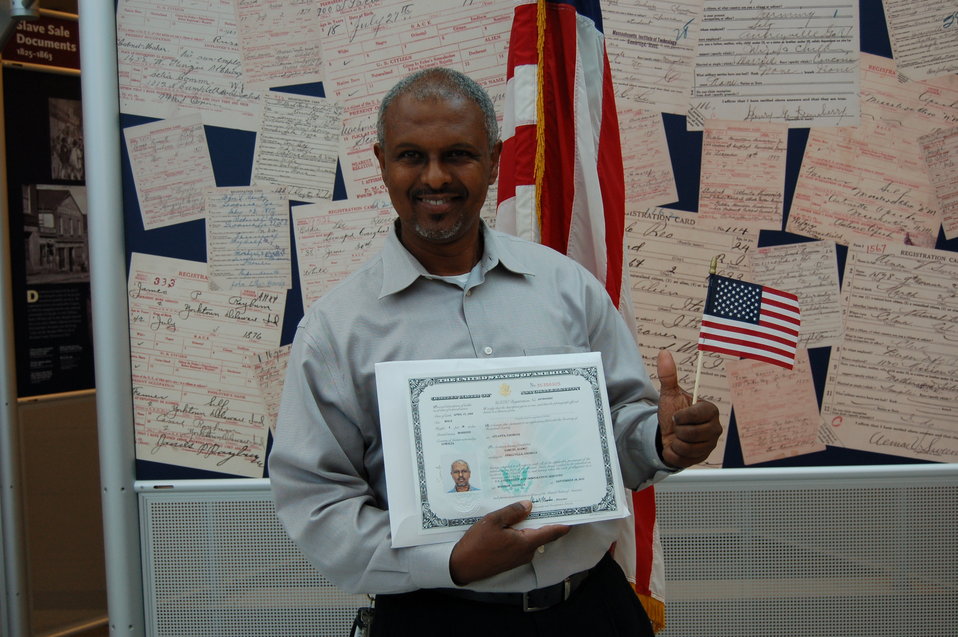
New Citizens